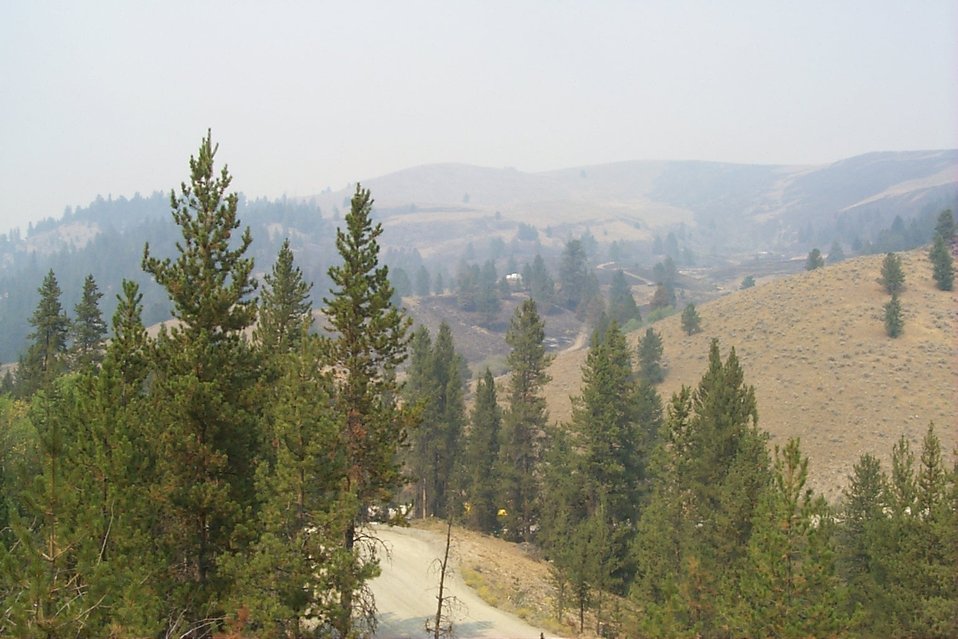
Fire Clearwater Fire Salmon Field Office USRD Upper Snake River District